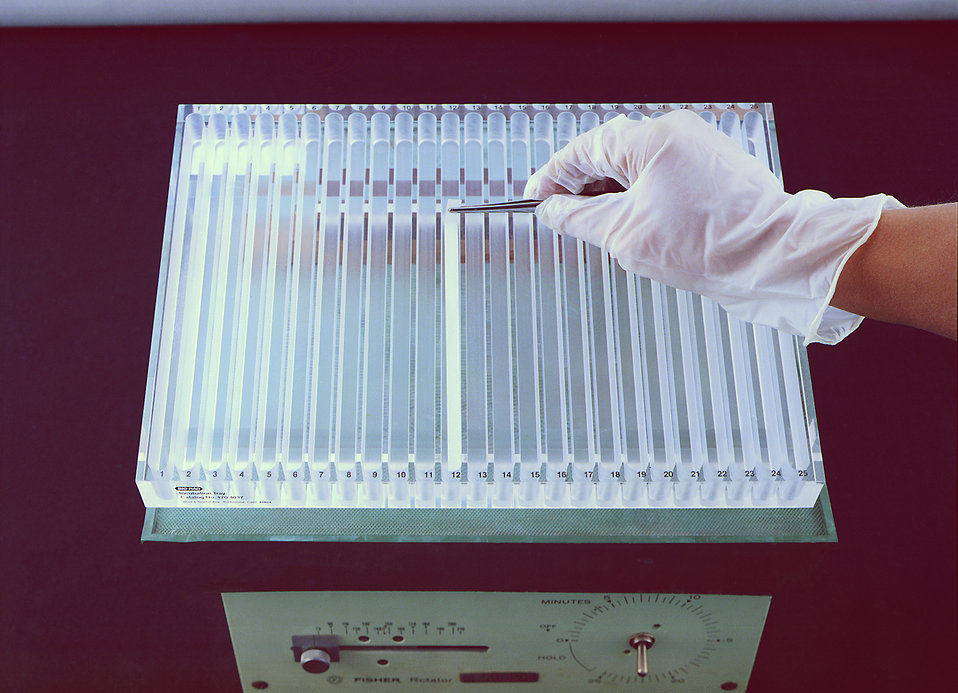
A technician is placing a Western blot strip in a test tray. Antigens if present will bind to this sheet and later be detected.